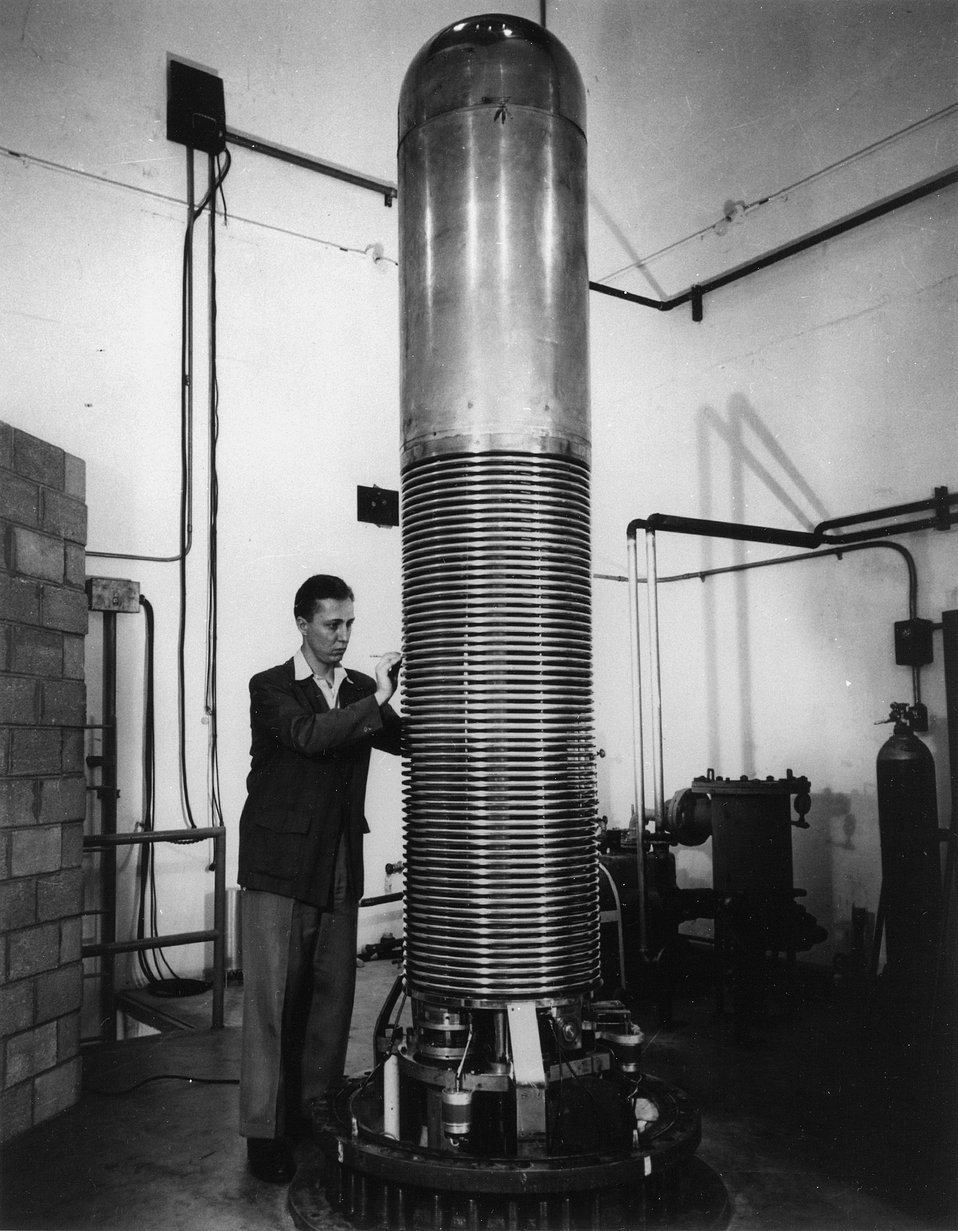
Dr. C. H. Johnson, Physicist, inspects the upper part of the 2 MEV Van de Graaff after the cover shell is put in place. c. 1957